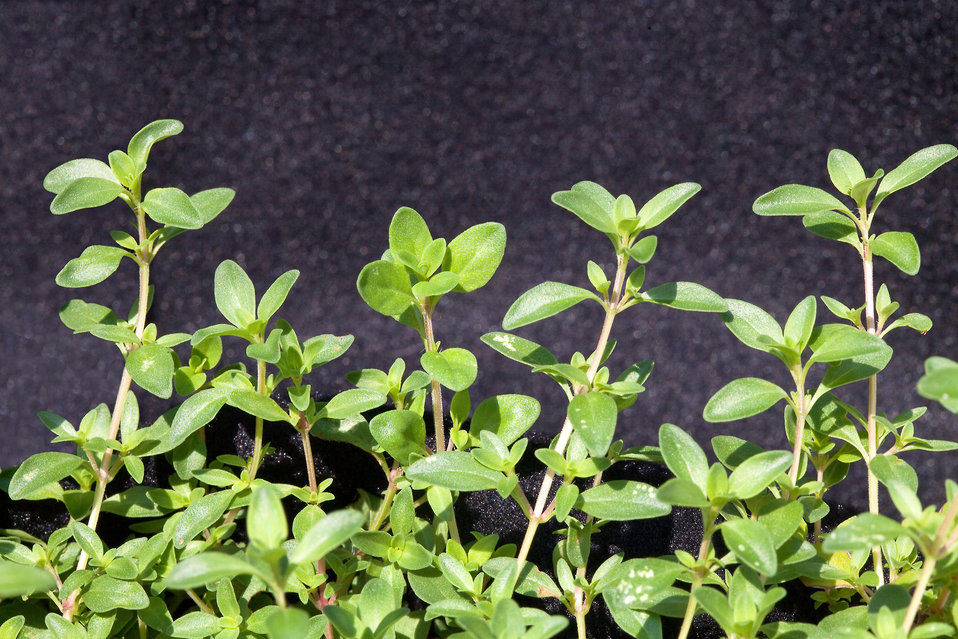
The herb thyme grows in a cultivated bed in Albany, CA on Aug. 2, 2012. U.S. Department of Agriculture (USDA) Agricultural Research Service (ARS) scientists in Albany, CA are determining whether the natural compound thymol, extracted from thyme, can work synergistically with conventional antifungal meds to boost their effects.